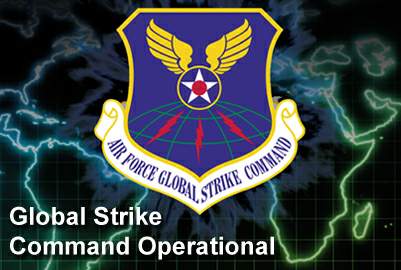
Air Force officials stand up Global Strike Command

Air Force Global Strike Command, stood up Aug. 7 at Barksdale Air Force Base, La., will provide combat ready forces to conduct strategic nuclear deterrence and global strike operations in support of combatant commanders.